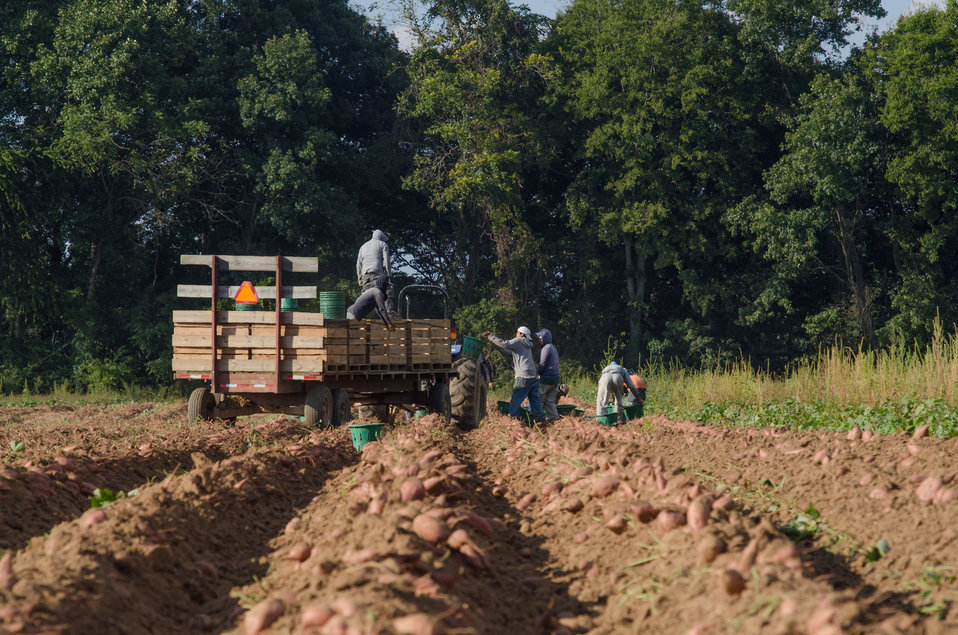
Harvested sweet potatoes are loaded onto a trailer at the Kirby Farms in Mechanicsville, VA on Friday, Sept. 20, 2013. The hand picked potatoes are taken to an onsite-heated warehouse to cure, a process that toughens the skin and brings the sweetness to a level normally expected in markets. Kirby Farms devotes 200 acres v to eggplant, spinach, beets, tomato, jalapeno peppers, melons and a variety of greens. Soybeans and small grain are grown on the remaining 300 acres. Using rotational crop practices allows Kirby Farms to double and triple crop yields. Wholesalers, who buy from this farm, sell the produce to major supermarkets in the Mid-Atlantic region, from North Carolina to Maryland. Restaurants in the local area prepare and serve the local bought produce to patrons in the Richmond, VA metropolitan area.